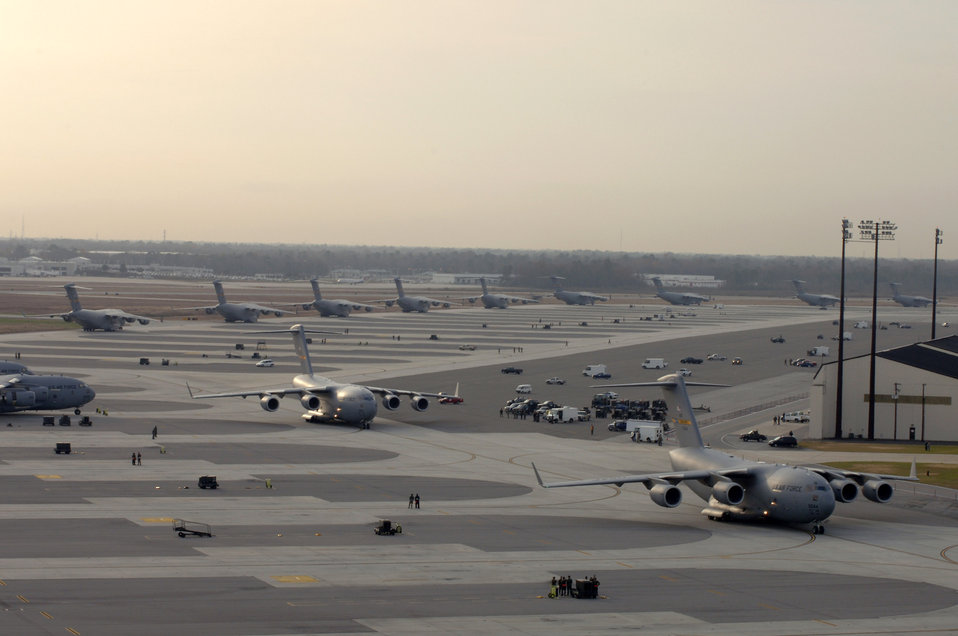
Globemasters galore

A line of C-17 Globemaster III's prepare to taxi Dec. 21 at Charleston Air Force Base, S.C. The C-17 is capable of rapid, strategic delivery of troops and all types of cargo. The design of the aircraft allows it to operate on small, austere airfields. It can take off and land on runways as short as 3,500 feet and 90 feet wide.